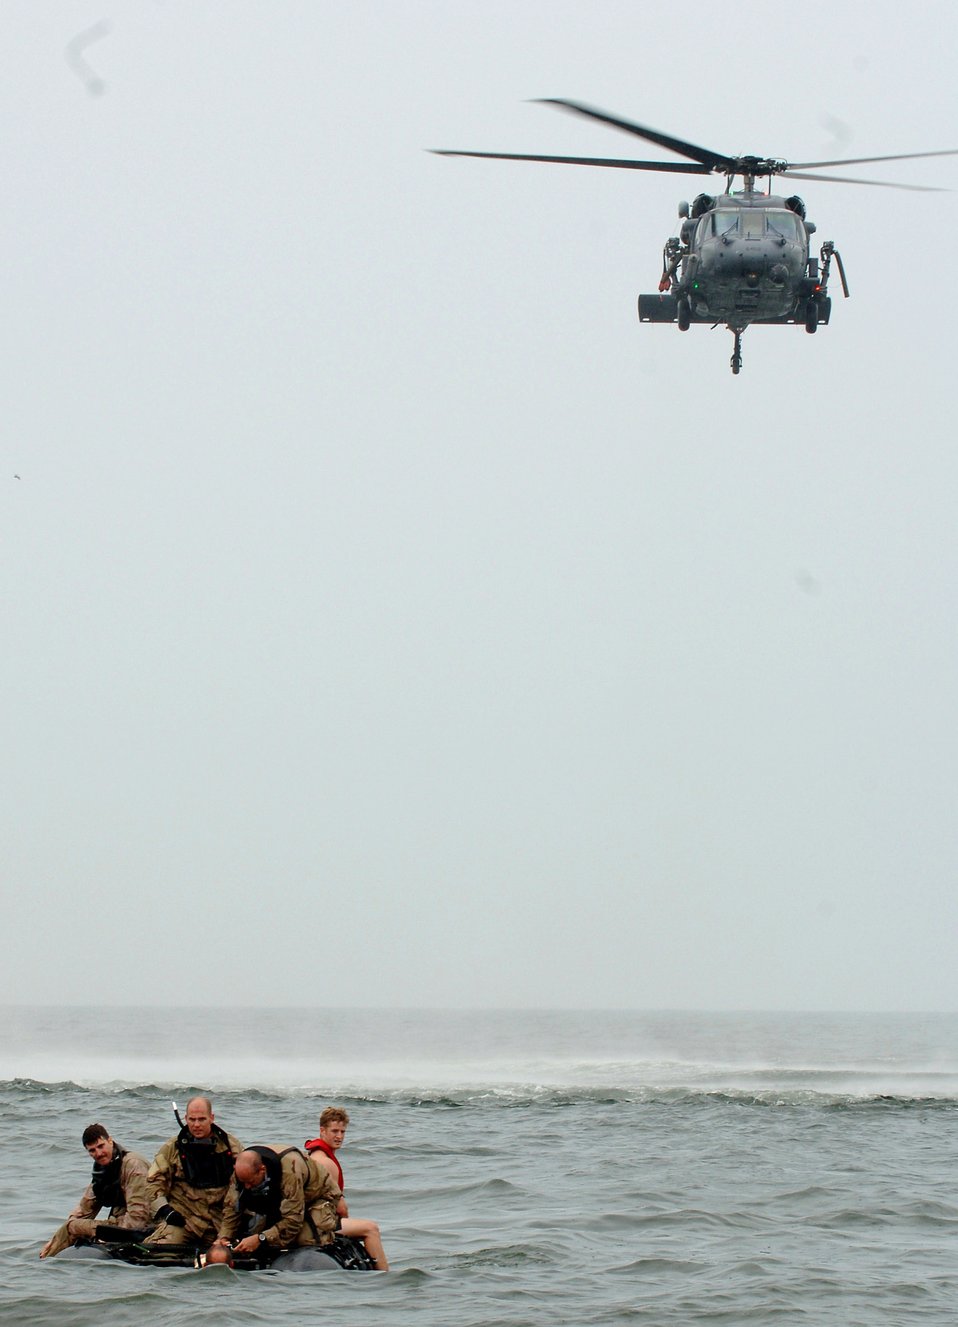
New capability improves search, rescue response

Pararescuemen from the 347th Rescue Group at Moody Air Force Base, Ga., prepare to extract